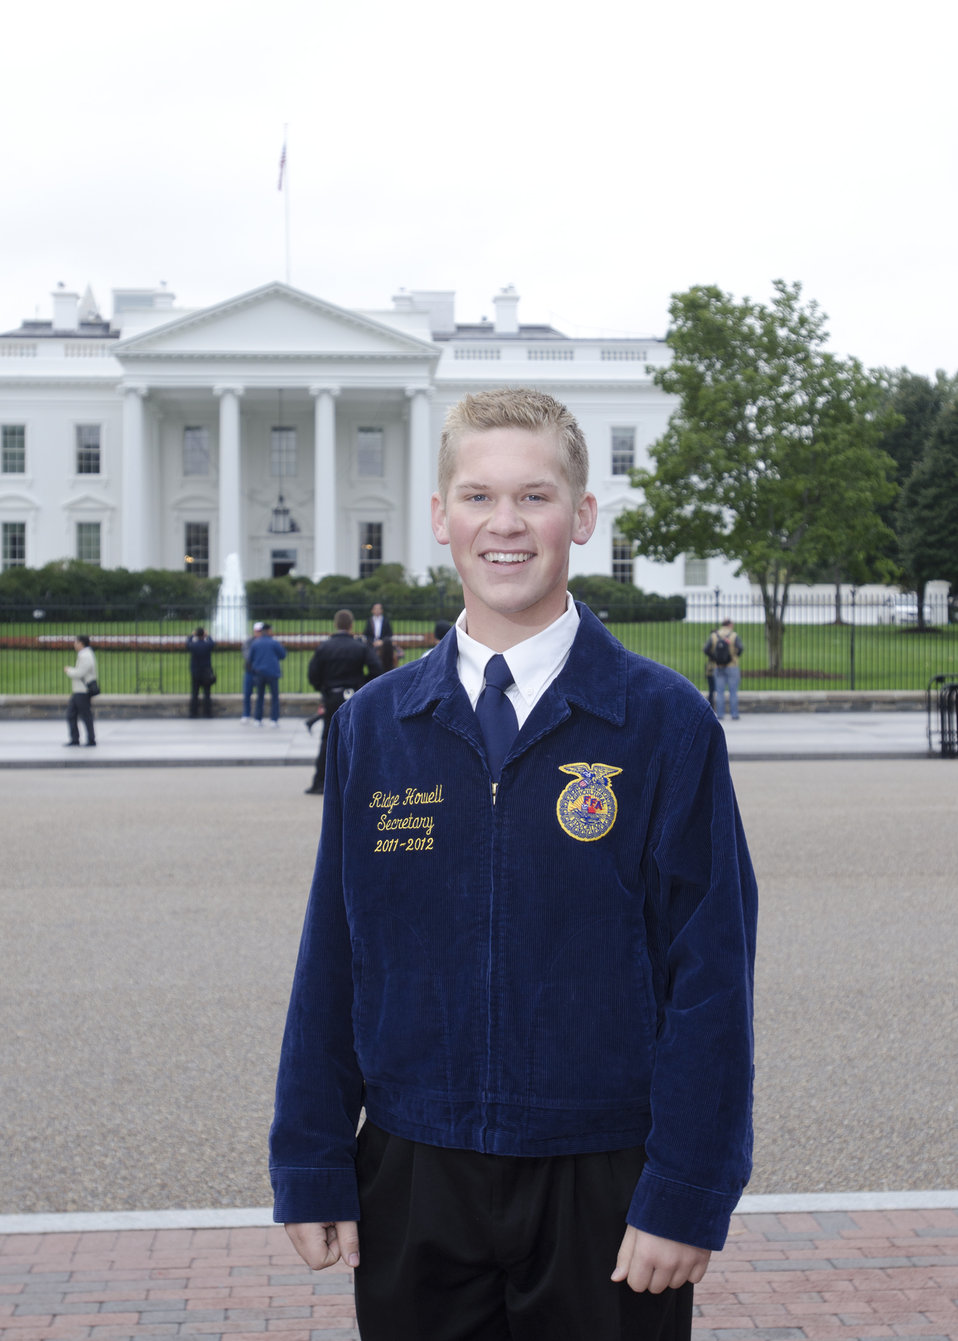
Champion of Change recipient Ridge Howell in front of the White House in Washington, D.C. on Tuesday, Oct. 9, 2012. Howell is a high school senior in Checotah, OK., a leader and advocate for youth community involvement. Ridge works hard to encourage other young people in Checotah to help their neighbor, and has helped advance a variety of local projects such as the Checotah Community Garden and a senior citizens lawn mowing program. Ridge’s number one goal is to instill leadership, work ethic, and the importance of serving others into every student.